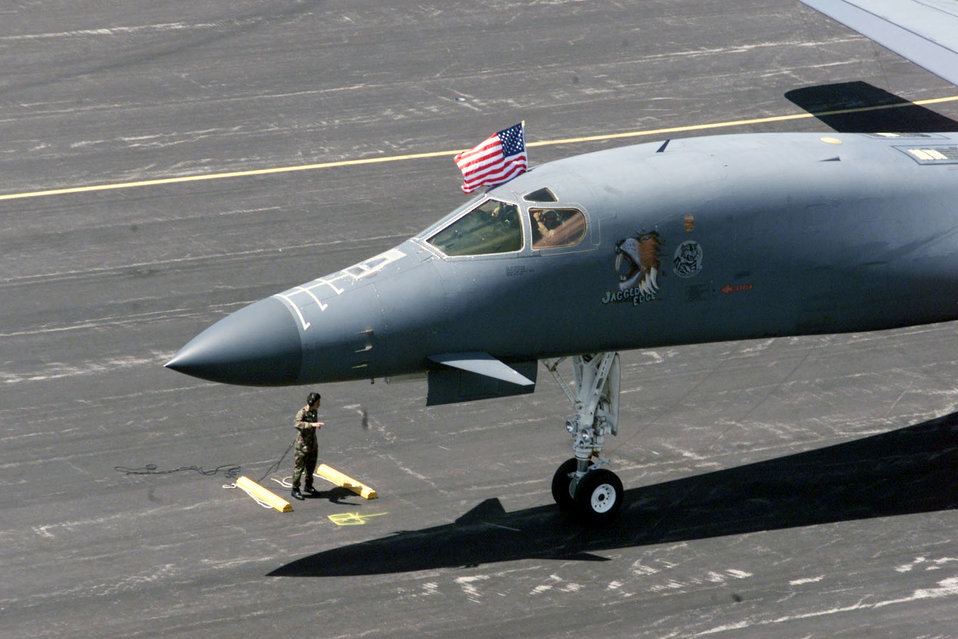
Sweet home South Dakota

ELLSWORTH AIR FORCE BASE, S.D. -- A B-1 Lancer prepares to stop on the flightline here after returning from a deployment May 13. Six B-1s and their crews return to a crowd of family and friends welcoming them home. As of May 8, B-1s flew 497 combat sorties supporting operations Enduring Freedom and Iraqi Freedom and dropped 4.56 million pounds of munitions.